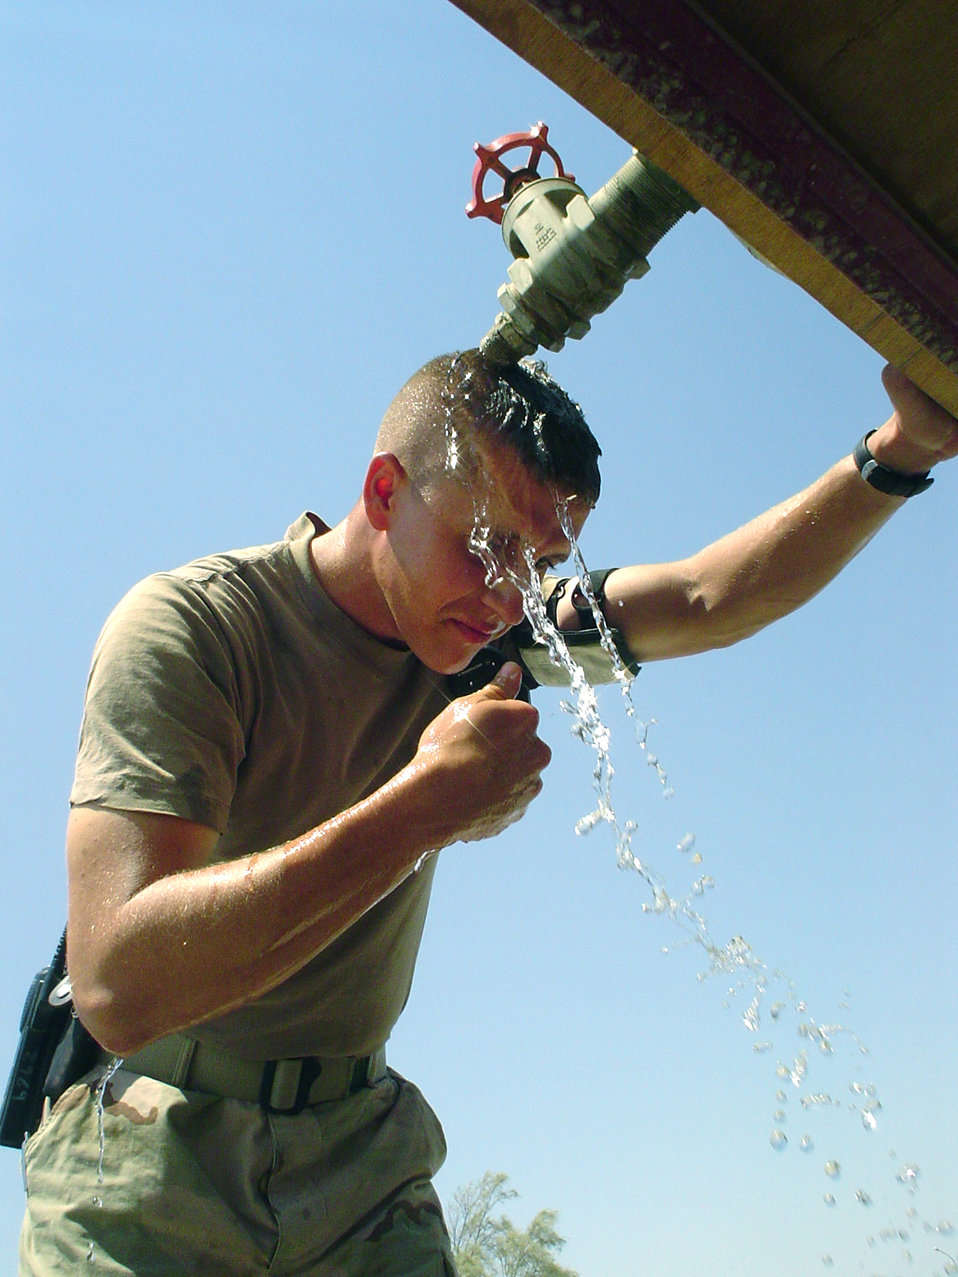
Give me water

TALLIL AIR BASE, Iraq -- Staff Sgt. Jeremy Riggleman rinses away the heat of the day under a water buffalo here. He is a power-production craftsman with the 407th Expeditionary Civil Engineer Squadron. With temperatures routinely topping 120 degrees, heat is one of the biggest enemies warfighters face here.